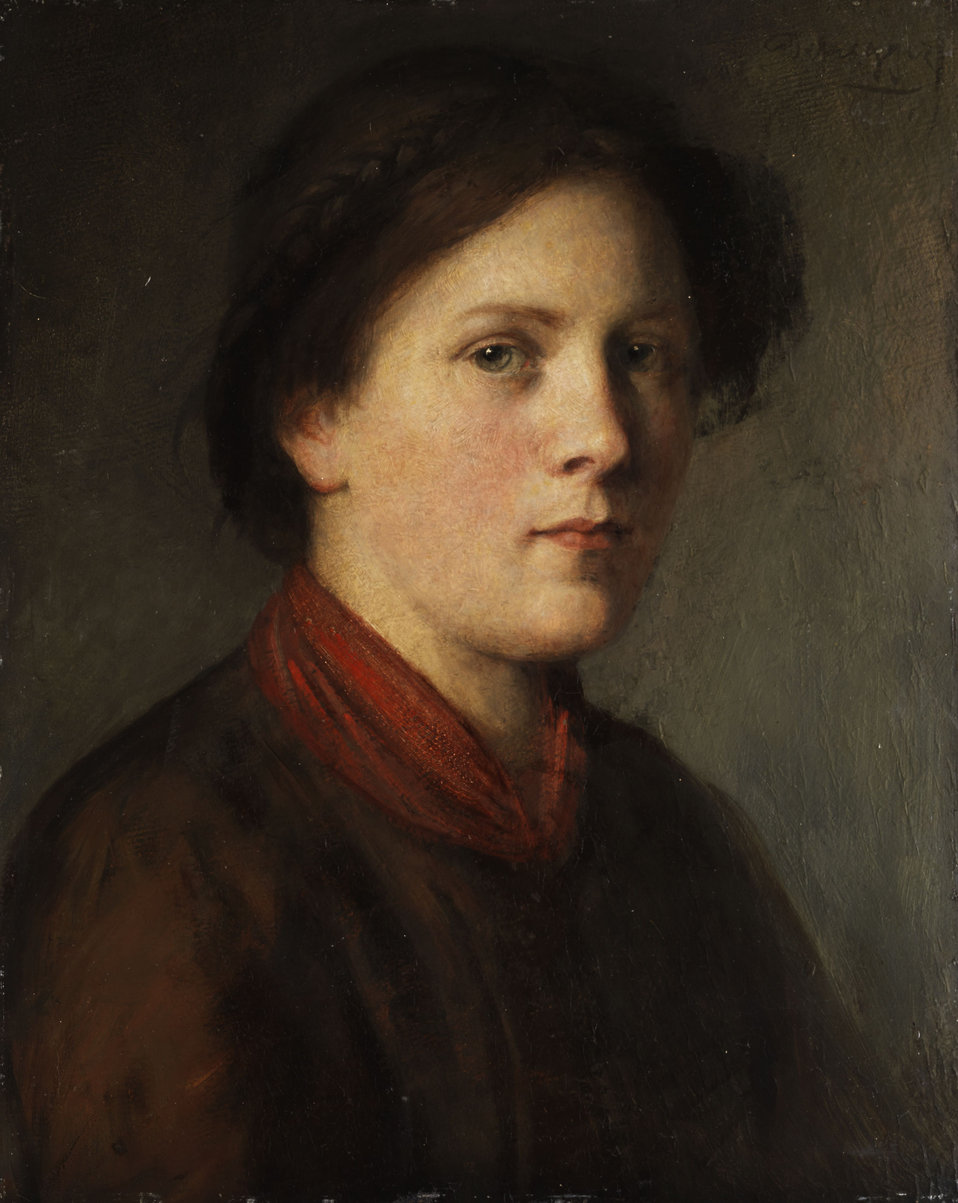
Deutsch: Junges Tiroler Dirndl. Öl auf Malkarton. 41 x 33,5 cm. Rechts oben signiert.